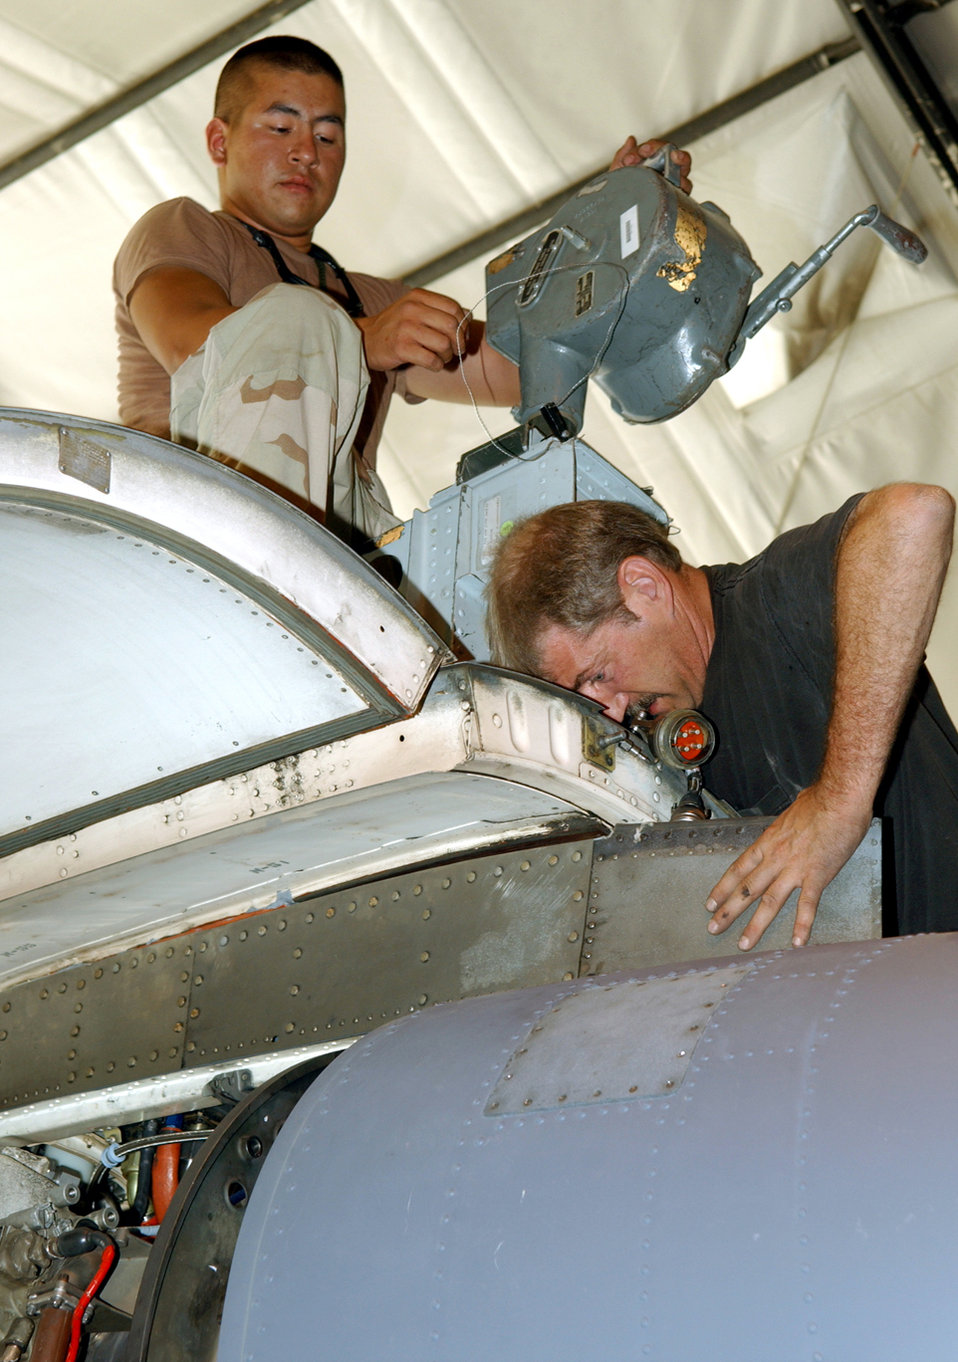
Cable connection

BAGRAM AIR BASE, Afghanistan -- Senior Airman Christopher Dalbec (top) cranks a hoist while Tom Ross connects cables to an engine during an engine swap. Both men are deployed as part of the 354th Expeditionary Aircraft Maintenance Squadron.